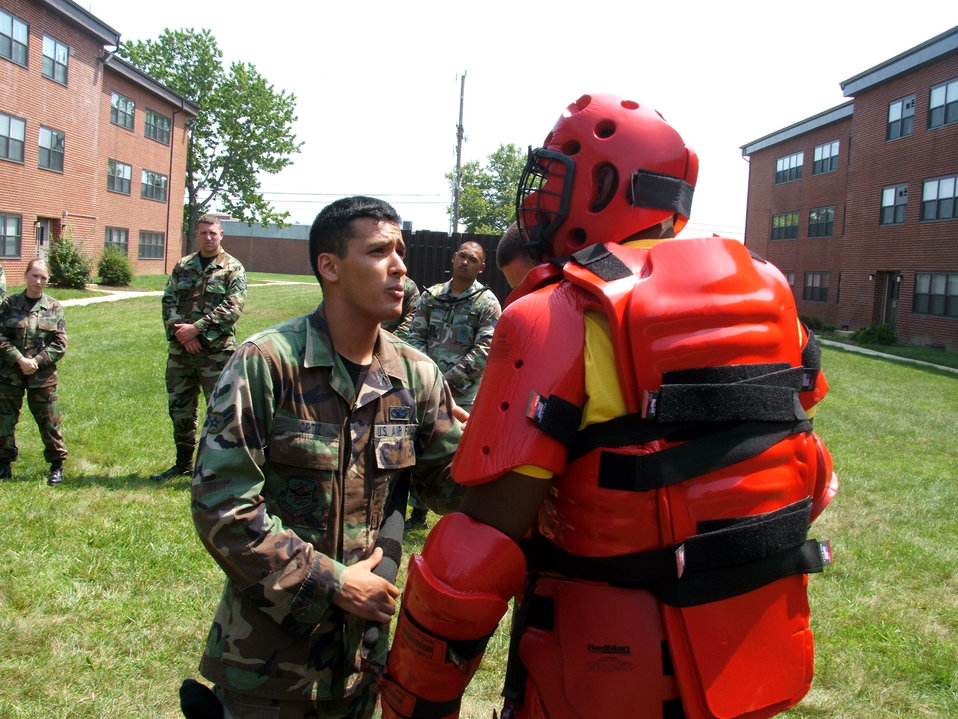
Phoenix Raven

Airman 1st Class Guillermo Ortiz participates in a training scenario with an aggressor in a